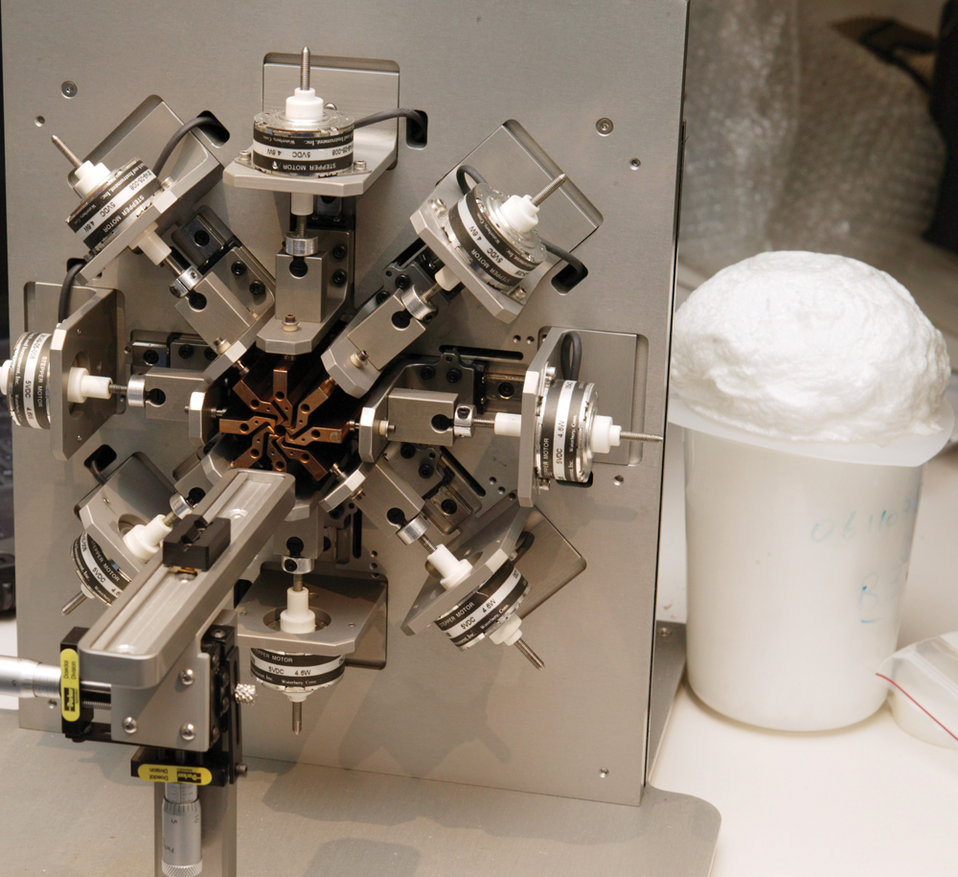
An eight-blade cylindrical crimping machine with heated blades at LLNL compresses shape-memory-polymer (SMP) foam into a secondary shape. Next to the crimping machine is a foam souffle from - plugs are first cut.

A Livermore team has developed an alternative treatment that isolates an aneurysm from the rest of the vascular system with one implanted device- a 'plug' make from shape-memory-polymer )SMP) foam.